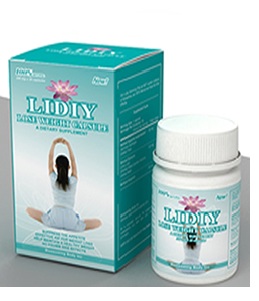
RECALLED - Marketed as a dietary supplements for weight loss

October 7, 2013 – Product Recall – B@B Trade Inc. Issues a Voluntary Recall of 'Slim Fortune', 'Lidiy', and 'Slim Expert' weight loss Dietary Supplement.